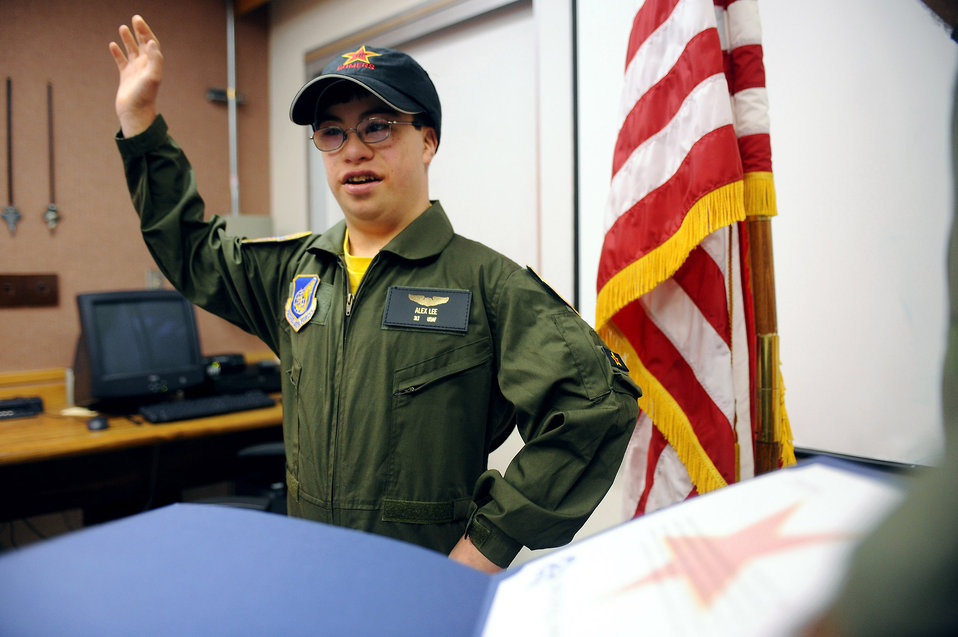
Eielson Airmen turn child into pilot for a day

Alex Lee raises his right hand and performs the honorary oath of enlistment as a new pilot with Maj. Corey Hermesch Aug. 22 at Eielson Air Force Base, Alaska. Alex was born with congenital heart defects and Down syndrome and was selected by the Make-A-Wish Foundation for the Pilot for a Day program. The purpose of this program is to ease the pain of children who lost a normal childhood due to illnesses or disabilities. Major Hermesch is a pilot assigned to the 18th Aggressor Squadron.